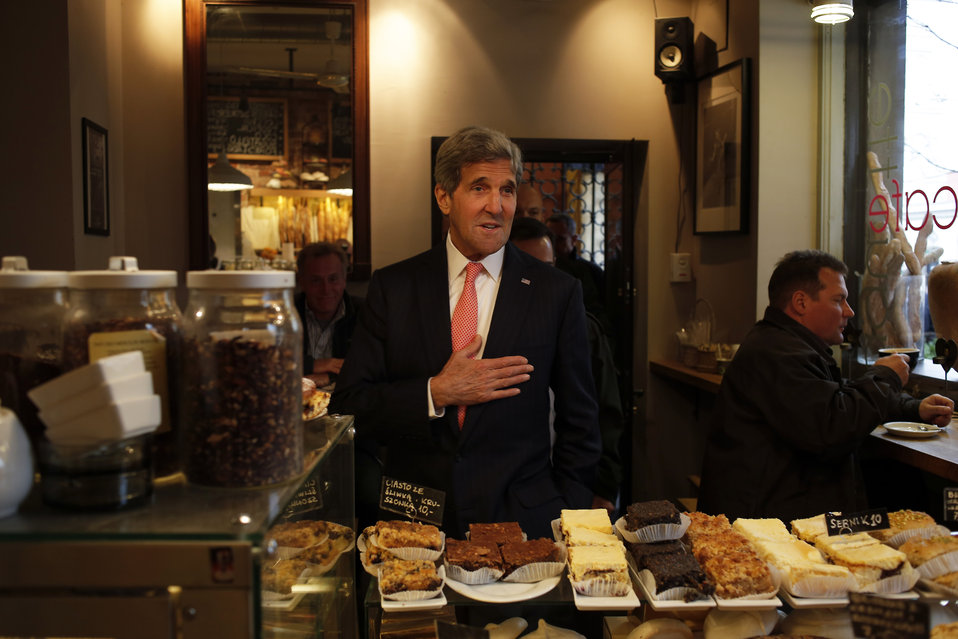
Secretary Kerry Visits a Warsaw Bakery

U.S. Secretary of State John Kerry greets a bakery worker before ordering a baguette during a walk through downtown Warsaw, Poland, on November 5, 2013.